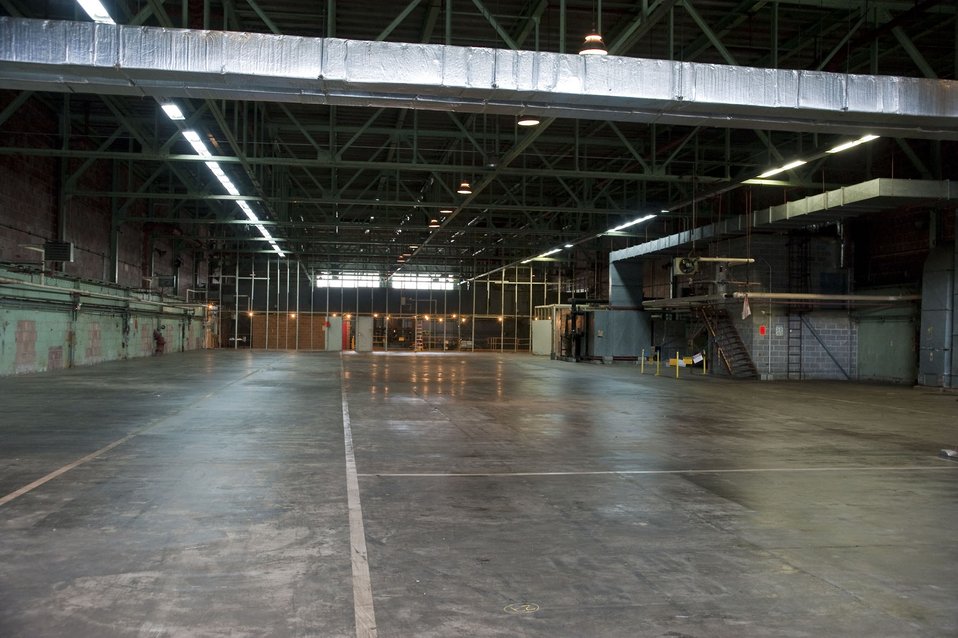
Oak Ridge - Y-12 waste removal

A room in Y-12 National Security Complex’s Alpha 5 is shown after waste removal.